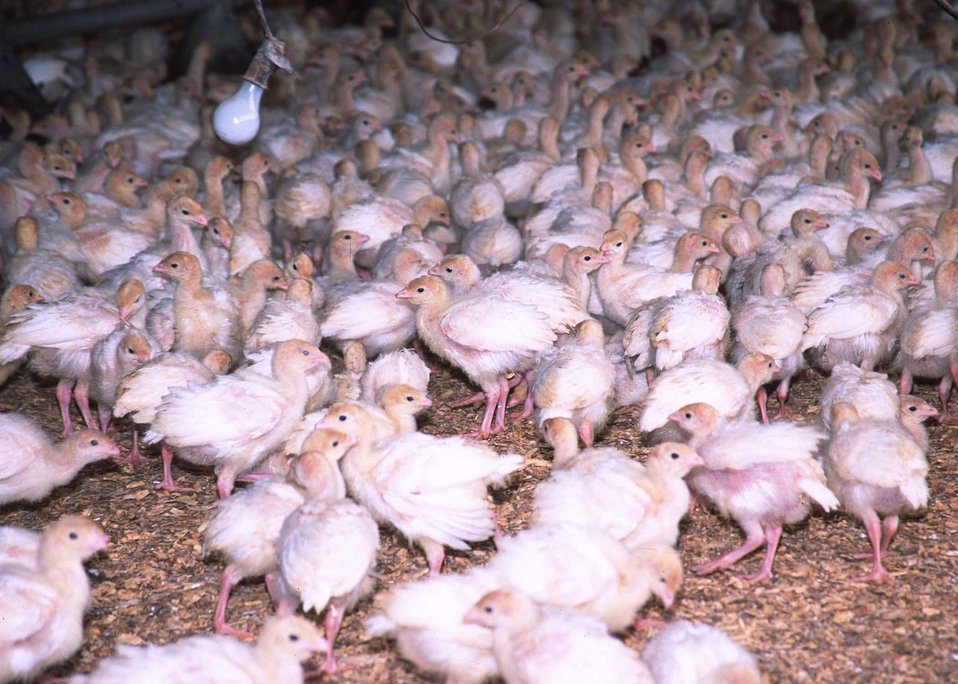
A total of 10,000 turkeys are raised in each building in Benton, Arkansas. Manure and wood chips used for bedding are then composted and used for fertilizer on adjacent pastures.